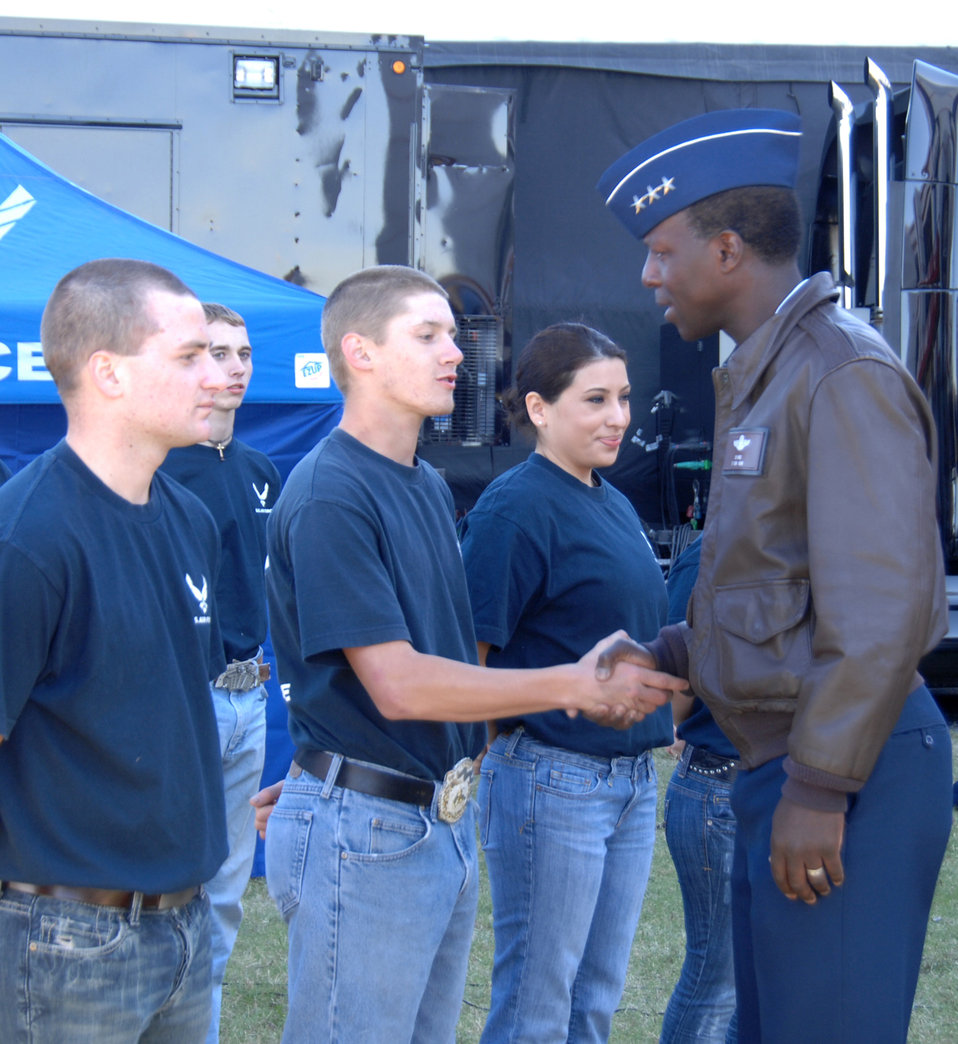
General Rice at Texas Motor Speedway

Lt. Gen. Edward A. Rice Jr., incoming commander of Air Education and Training Command, greets Delayed Enlistment Program members at Texas Motor Speedway Nov. 7, 2010, before the NASCAR Sprint Cup Series race. The general, who has been confirmed for his fourth star, conducted the DEP swearing-in ceremony in front of thousands of NASCAR fans before the start of the race.